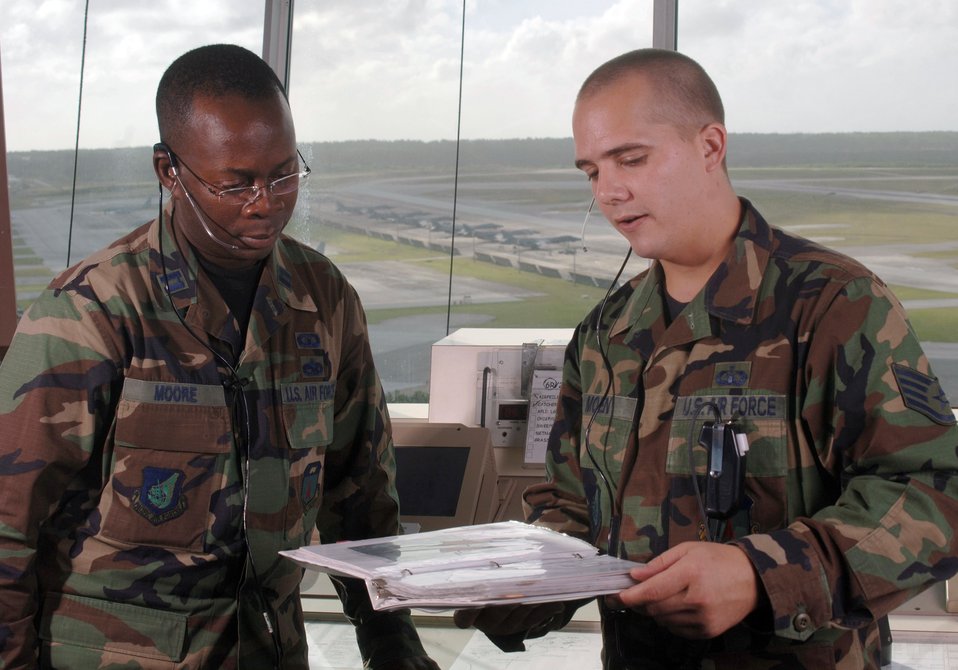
Aircraft control

ANDERSEN AIR FORCE BASE, Guam (AFPN) -- Staff Sgt. Jesse Moen (right) briefs Capt. Marquette Moore on the status of arriving and departing deployed aircraft at the control tower here. Sergeant Moen is an air traffic controller, and Captain Moore is an operations flight commander with the 36th Operations Support Squadron. The Airmen coordinate movements of military and commercial aircraft through radar and visual observation. They closely monitor each plane to ensure safe distance between aircraft.